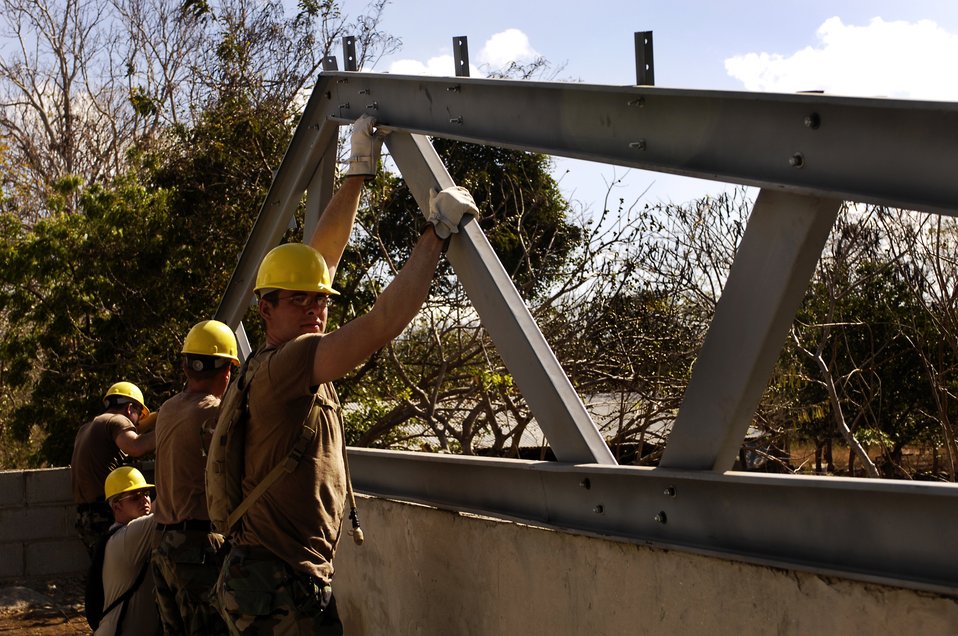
New Horizons-Nicaragua 2007

South Dakota National Guard members attached to the 820th Expeditionary RED HORSE Squadron help stabilize rafters at the San Martin de la Calera school construction site March 23. The 153rd Engineering Battalion members are supporting New Horizons - Nicaragua 2007.